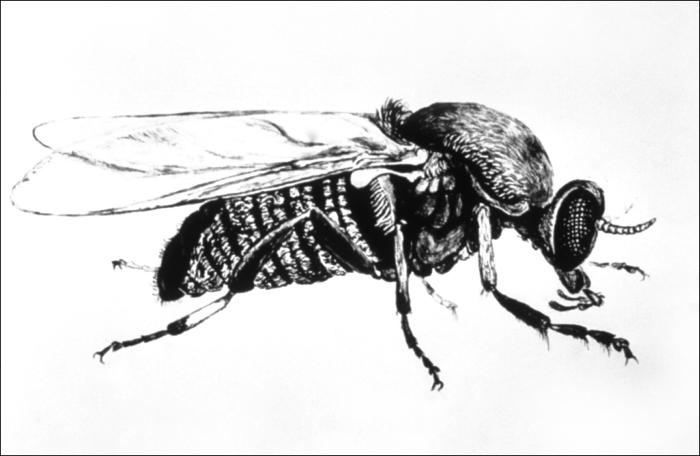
This is an illustration of a female Simulium sp. of fly, more commonly known as the "black fly".